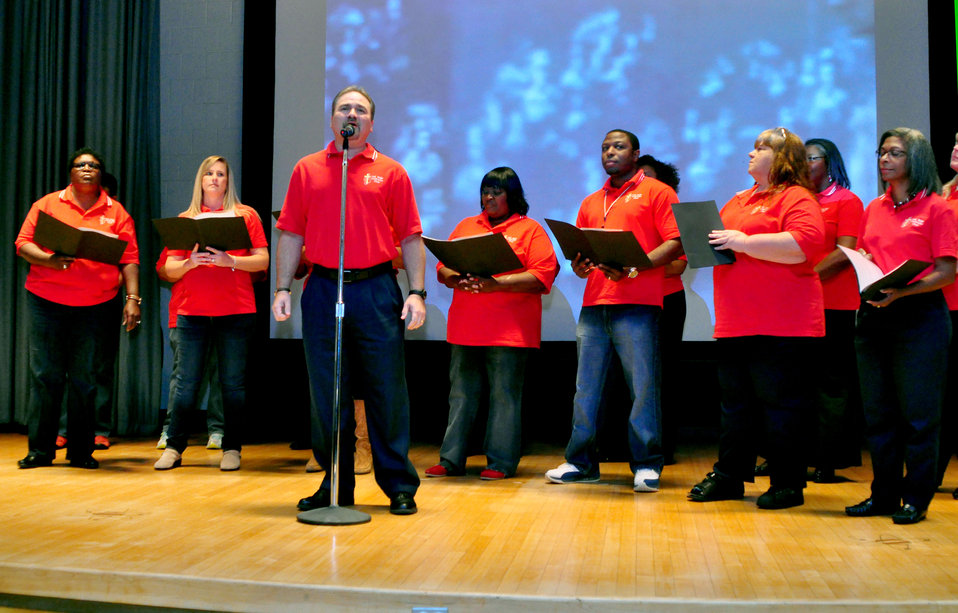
Oak Ridge Celebration Choir Veteran's Day Program DOE ORO Oak Ridge 2013

13-129b DOE photo Lynn Freeny 11-7-2013 Oak Ridge Tennessee